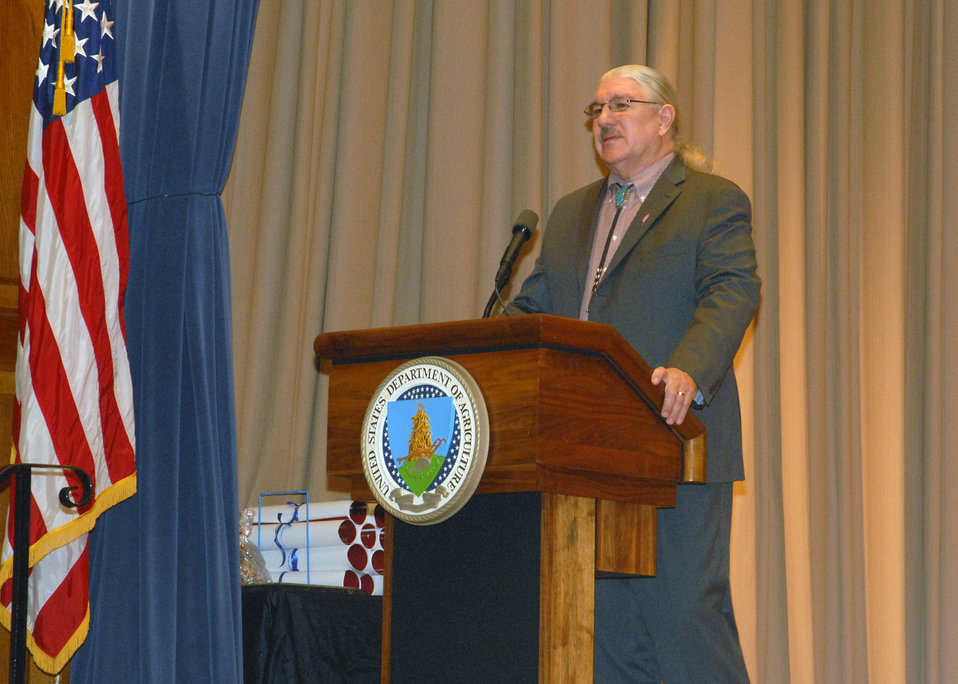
Agriculture Deputy Under Secretary for Natural Resources and Environment (NRE) Arthur “Butch” Blazer speaks at the U.S. Department of Agriculture’s (USDA) Native American Heritage Month Observance in the Jefferson Auditorium at the USDA South Building in Washington, D.C. on Tuesday, Nov. 20, 2012. The theme for this year’s observance is “Serving with Honor, Pride, and Devotion: Country, Land and People”.